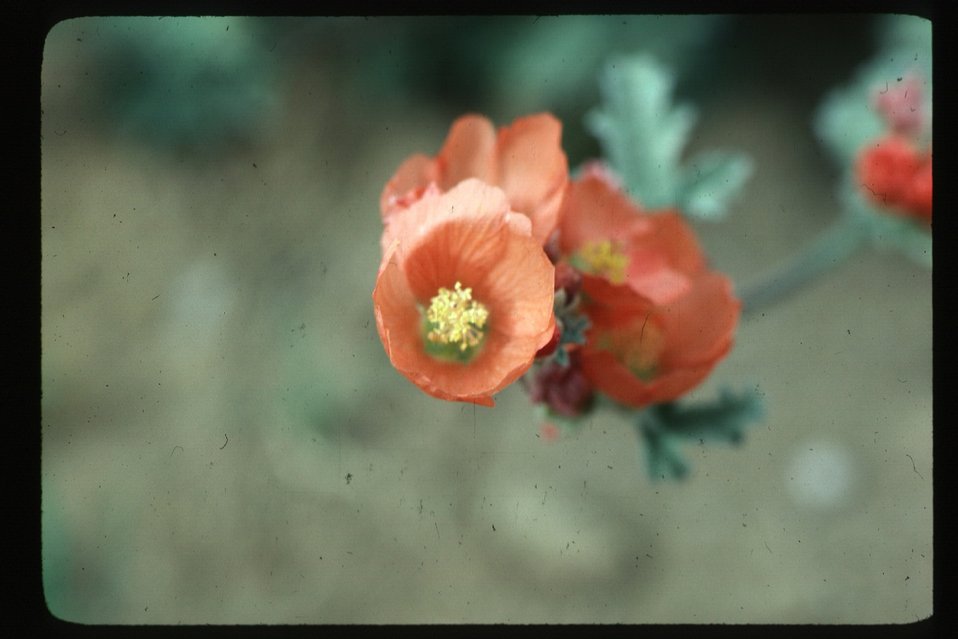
Globe mallow Brush, grasses Wildflowers